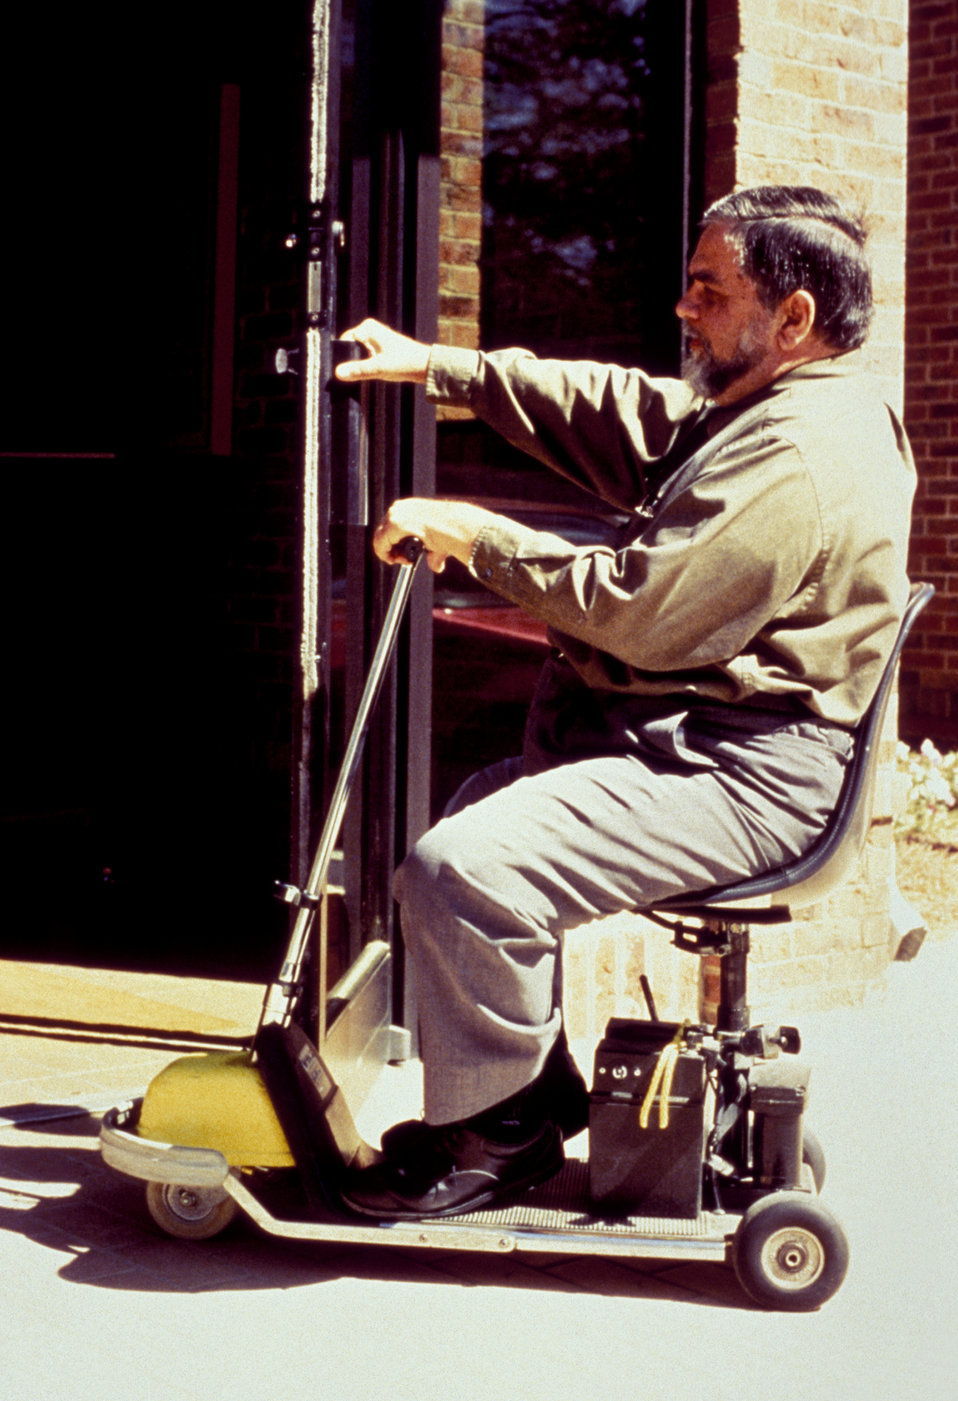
About to enter a facility while driving a motorized chair, the man in this 1994 image seemed to have very little difficulty in negotiating this well-designed entrance way. The doorway offered two vitally important characteristics in order to be considered an ergonomically sound portal for entry and exit. It presented visitors, both mobility-challenged and unchallenged, with an ample amount of space around the entry way that allowed for enough room to maneuver around the opening and closing door. Also, the door was easily opened with little effort put forth on behalf of visitors, especially those who were mobility impaired.